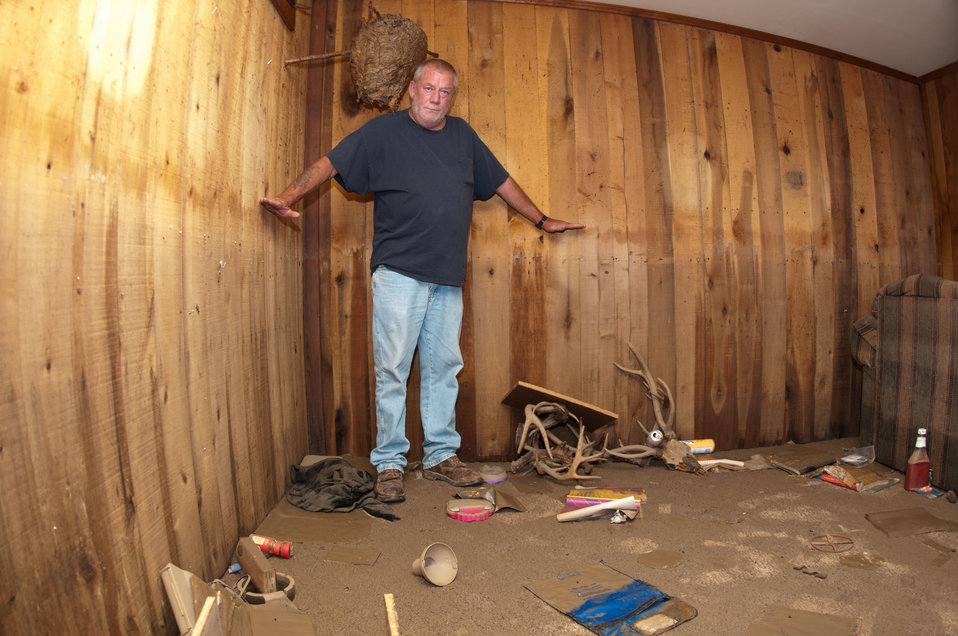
Lauderdale County, TN resident Robert Moffatt shows how high the muddy flood waters from the Mississippi River came into his home near Open Lake on Saturday, May 21, 2011 The recently renovated living room was full of water up to his waist and repositioned every piece of furniture and his possessions. The floor he stands on is almost 10 feet above the ground.